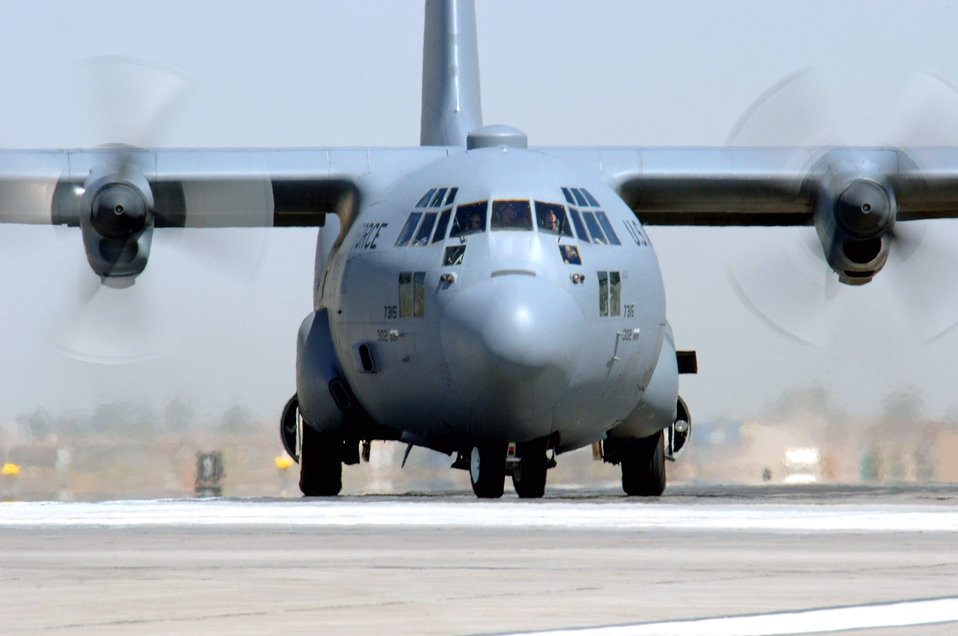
Jan. 13 airpower summary: C-130s support intra-theater airlift missions

A C-130 Hercules taxis in at a Southwest Asia air base after completing a mission in support of Operation Iraqi Freedom. The C-130s provide intra-theater heavy airlift, transporting passengers to include troop resupply and delivering tons of cargo helping to sustain operations throughout Afghanistan, Iraq and the Horn of Africa.